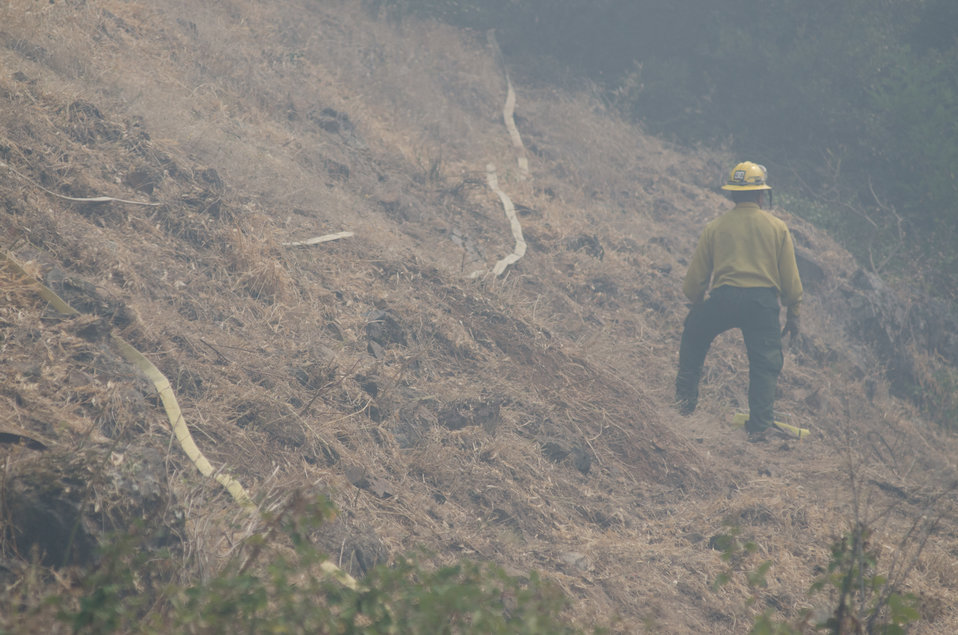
Engine Crews have prepositioned fire hoses to either run sprinklers that spray water on structures and surrounding areas, or to provide initial attack on small fires that may start in Sawyers Bar, CA, during the Salmon River Complex Fire, northwest of Sawyers Bar and west of Etna and Yreka, CA in the Klamath National Forest, on Wednesday, Aug. 6, 2013.